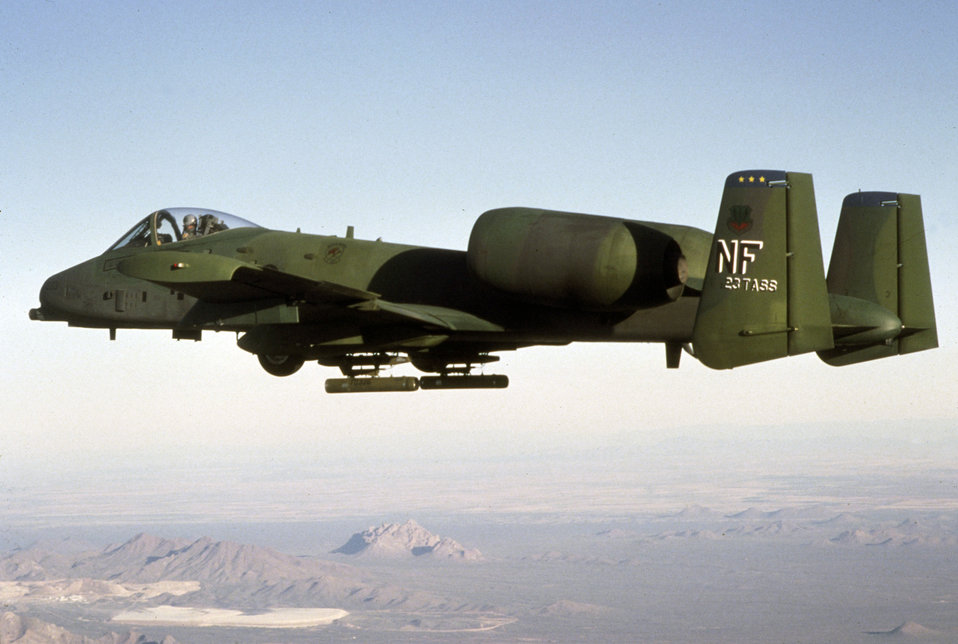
A-10 Thunderbolt

1970s -- The A-10 Thunderbolt in flight.